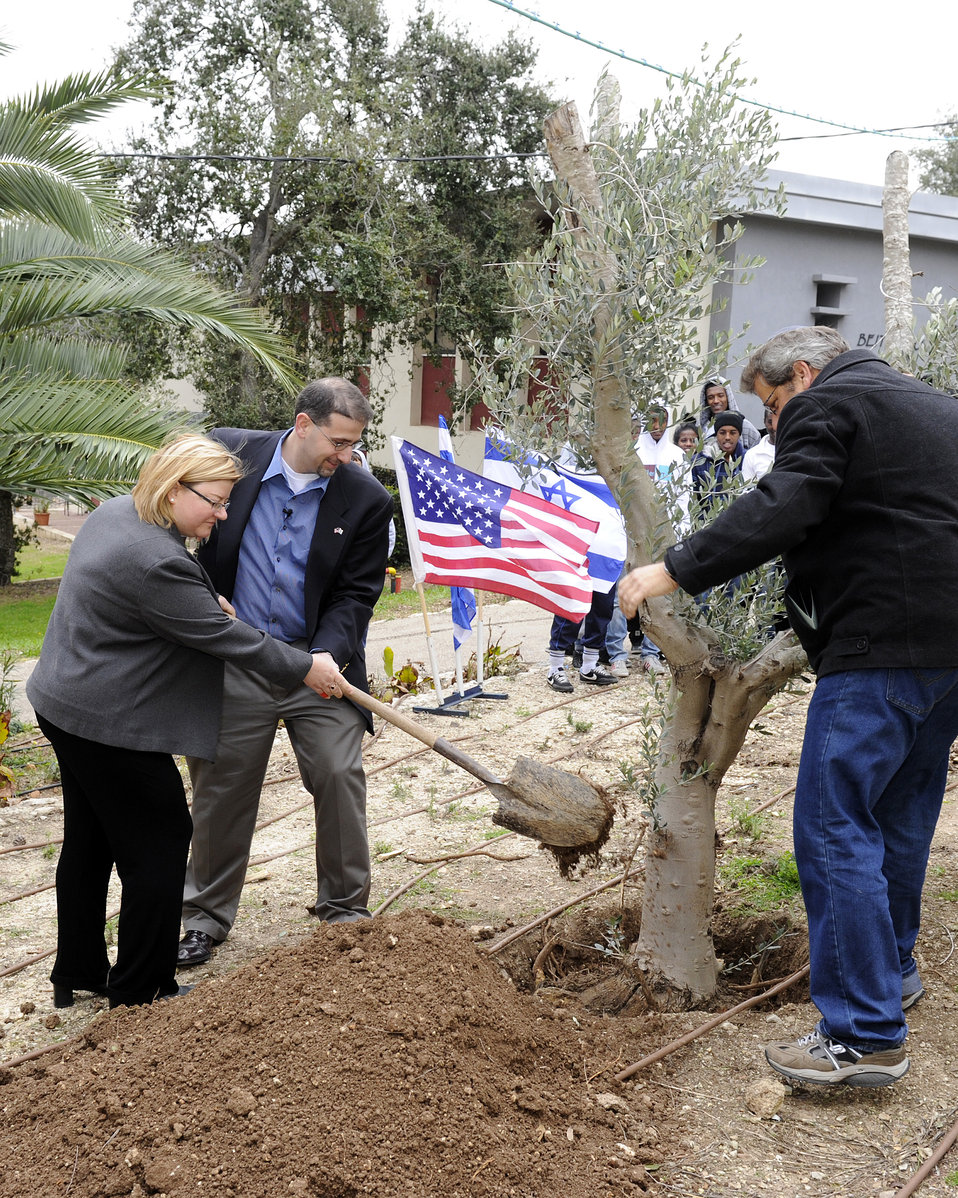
Ambassador Shapiro and Ms. Fisher Plant an Olive Tree

U.S. Ambassador to Israel Daniel Shapiro and his wife, Julie Fisher, plant an olive tree as a symbol of renewal and growth and America's deep-rooted friendship with Israel and to celebrate the eve of Tu b'shvat, Israel's Arbor day, at the Yemin Orde Youth Village, located in Nof HaCarmel, Israel, on February 7, 2012. The visit took place shortly after the one-year anniversary of the Carmel Forest Fire, December 2010, that nearly destroyed this Youth-at-Risk village.